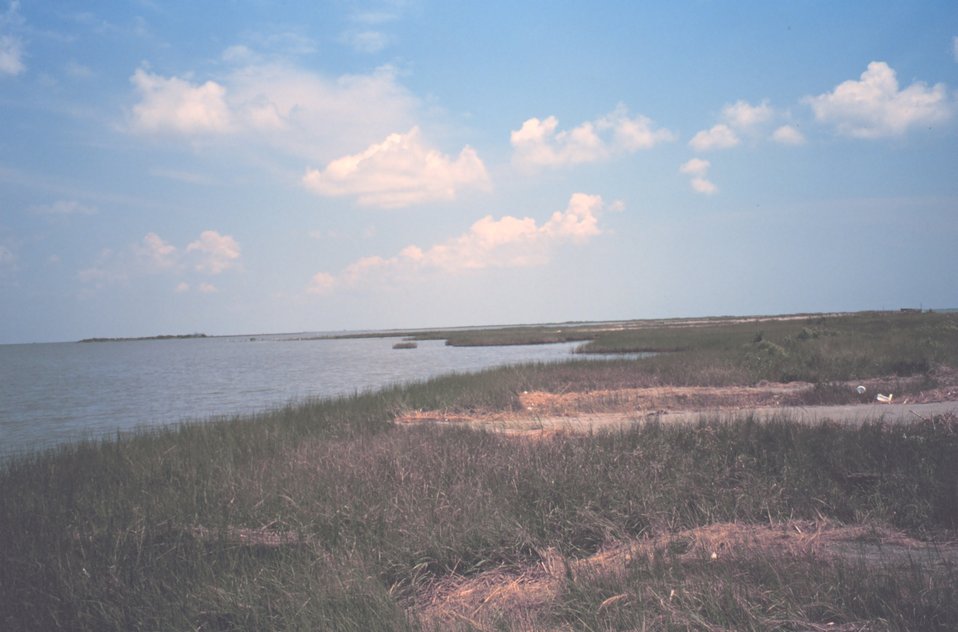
Broken marsh in Barataria Basin just west of the levee